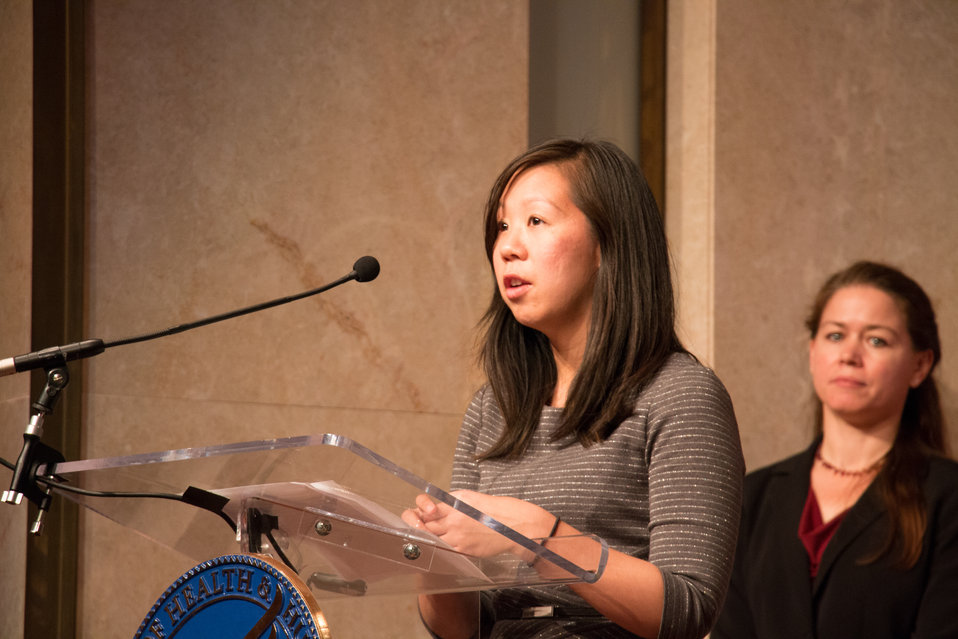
VHAP Launch (280 of 511)